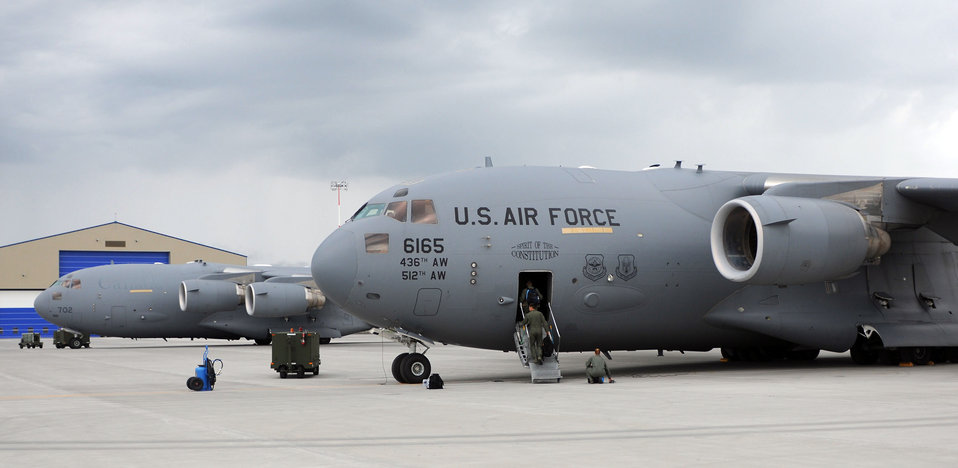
Dover reservists work to form Canadian sister squadron program

Airmen from the Air Force Reserve Command's 512th Airlift Wing at Dover Air Force Base, Del., flew a C-17 Globemaster III to Canadian Forces Base Trenton, Ontario, to spend three days with Royal Canadian Air Force members to forge a partnership and identify future training opportunities for flying, aerial port operations, airlift control and maintenance procedures.